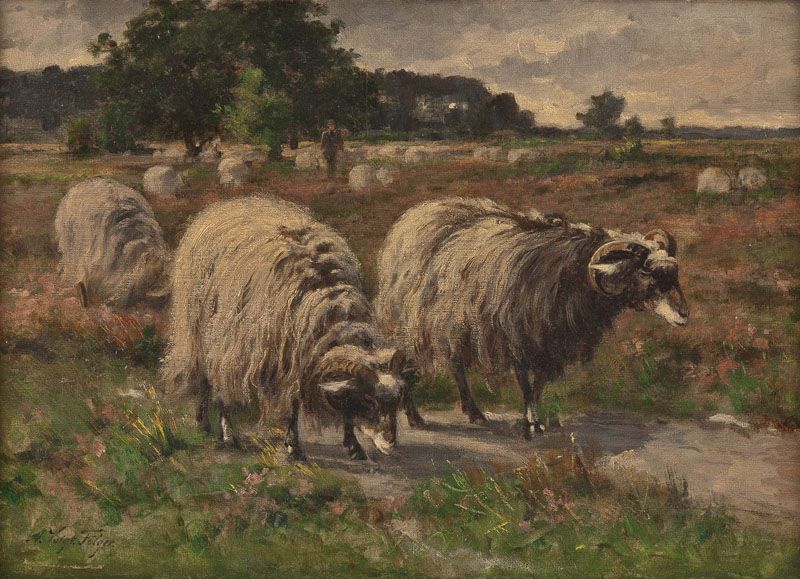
Deutsch: Heidschnucken mit Schäfer. Öl auf Leinwand, 46 cm x 66 cm, unten links signiert 'A. Voigt Fölger'